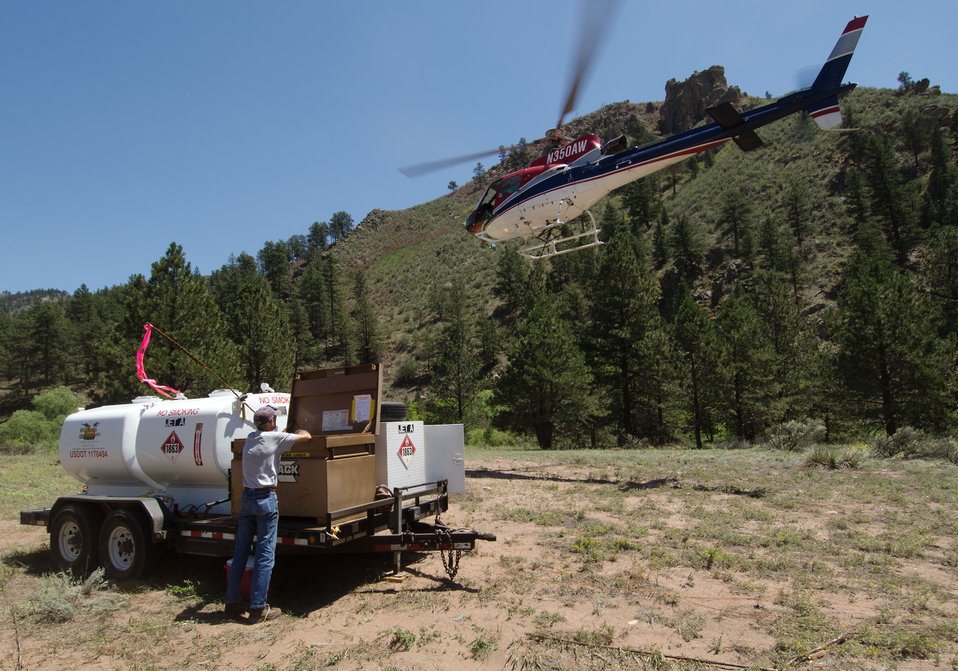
Mountain Air Chief Pilot Tim Booth takes off after refueling on Friday, July 20, 2012, at Seaman Reservoir, near Fort Collins, Colo., during the continuing aerial application of straw to mitigate soil and ash runoff from the mountainous terrain leading to Seaman Reservoir, drinking water resource for the City of Greeley. The A-Star Model B (3-blade rotor) aircraft will dangle a 100-foot cable over a load crew at the reservoir spillway. He will then lift an approximately 1,400 pound load of certified straw for aerial dispersal onto barren, burned out tributary lands surrounding the reservoir. Forest service lands received straw, while private and other lands receive a seed mix and straw to promote ground cover plant growth on ash-covered lands. In total, 1,800 tons of straw will be applied during the 14-day operation. One quarter of the cost was paid by the City of Greeley and the U.S. Department of Agriculture funded the remainder. The Hewlett Gulch Fire was started by a camper’s alcohol stove, on May 14, at the saddle of a picturesque mountain ridge along the Hewlett Gulch Trail of Poudre Canyon, in the Roosevelt National Forest, 60 miles north of Denver. At it’s more than 400 firefighters were battling fires being pushed by 50 mph winds that helped blacken over 12-square-miles of dry ground cover, brush and trees. Many of the trees were already dead and tinder dry from beetle-kill. The water in the reservoir remains clean and clear, while downstream water flow has gone from famous Colorado clear water to nearly black flows of water heavily laden with ash, silt, and burnt debris that recent thunderstorms have already washed down from the mountainsides.